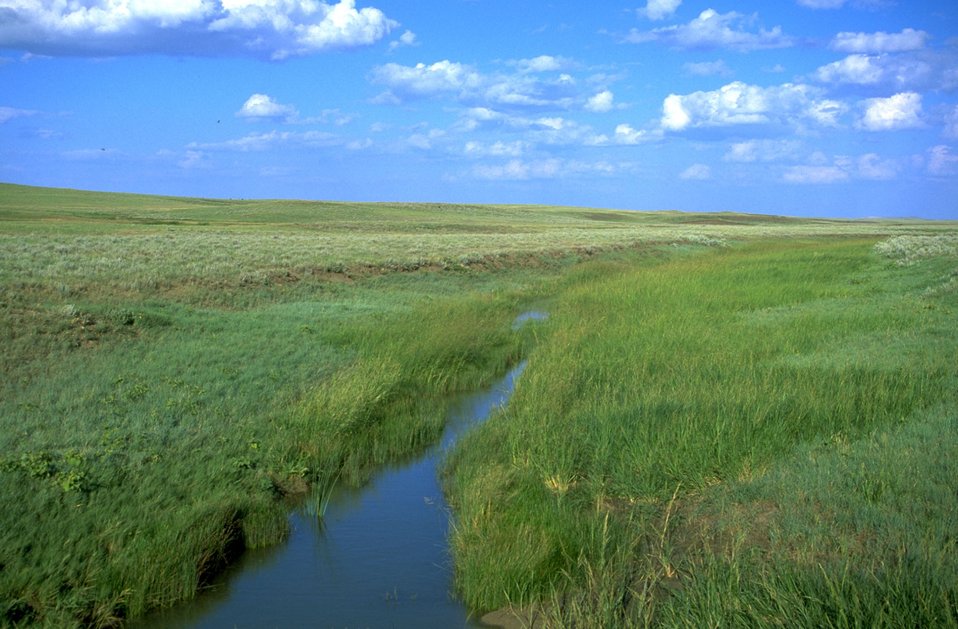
Alkali Creek 40 miles north of Belle Fourche